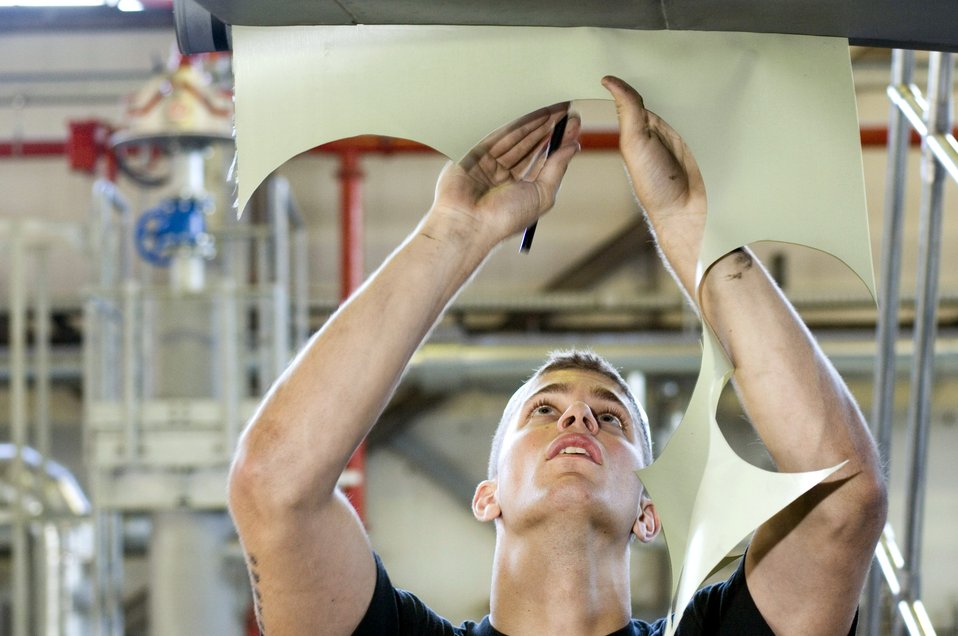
Isochronical inspection

Airman 1st Class Edward Hall sizes fabrication patches for the wing of a C-130 Hercules during an isochronical inspection at Ramstein Air Base, Germany, on July 18. Airman Hall, of Delray Beach, Fla., is a crew chief with the 86th Maintenance Squadron.